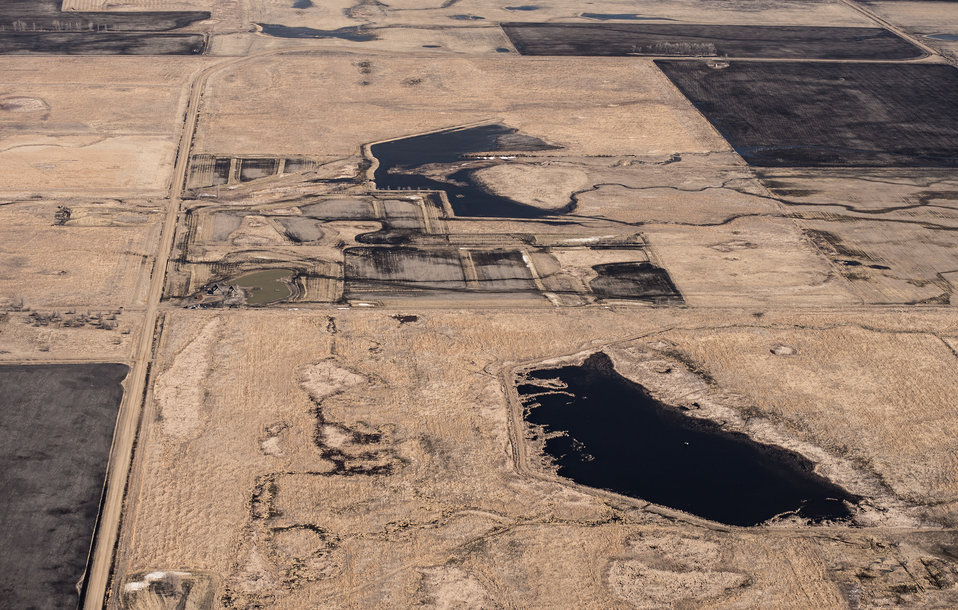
Ehlert North U.S. Department of Agriculture (USDA) Natural Resources Conservation Service (NRCS) Wetland Reserve Program (WRP) in Wilkin County, MN, on Tuesday, April 30, 2013. For information about this and other programs from the USDA Red River Basin Initiative (RRBI) please see www.mn.nrcs.usda.gov/news/features13/RRBI.html.